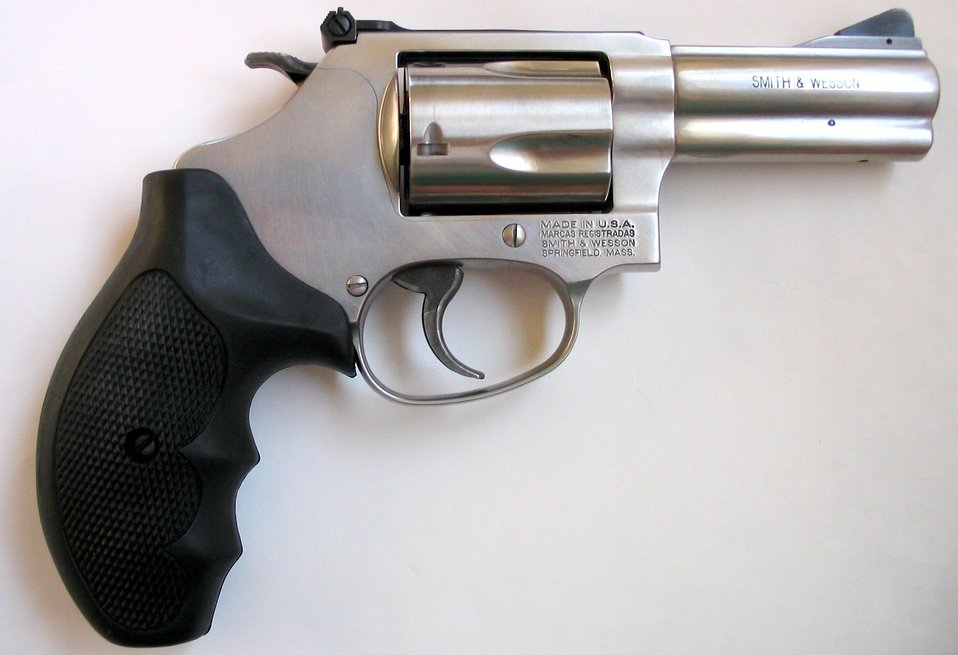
S&W 60 3in